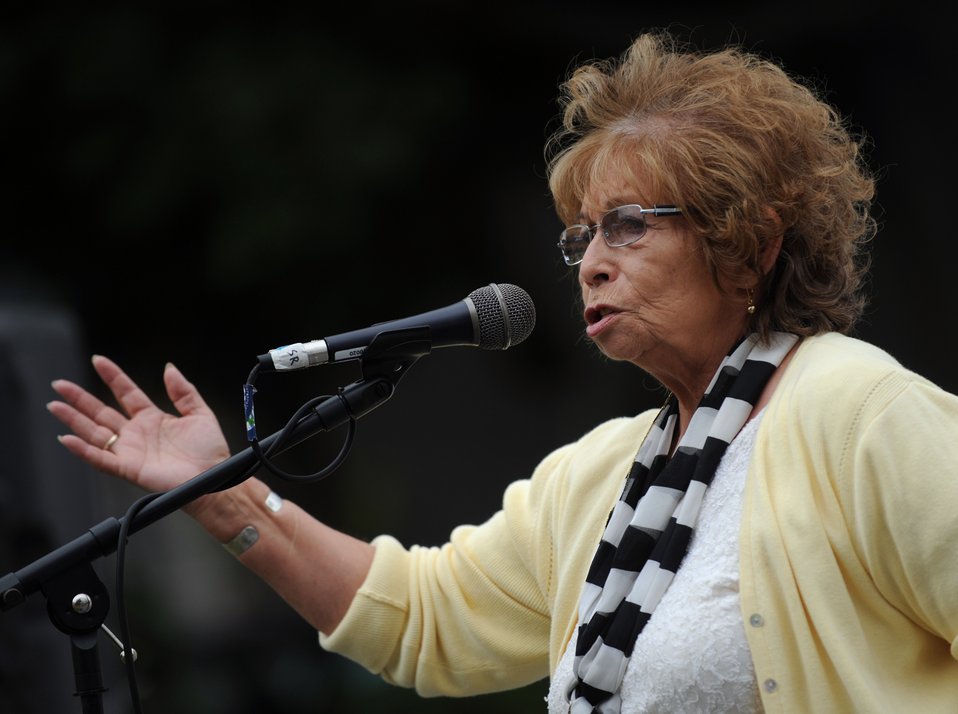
Duwamish Tribe Chairwoman

Cecile A. Hansen, Chairwoman of the Duwamish Tribe, speaks at the 5th Annual Duwamish River Festival. The river is part of the ancestral homeland for the people known today as the Duwamish Tribe. Local tribes have been a driving force in cleaning up the river. Visit www.epa.gov/region10/duwamish to learn more about EPA's efforts to clean up and restore the lower Duwamish River.